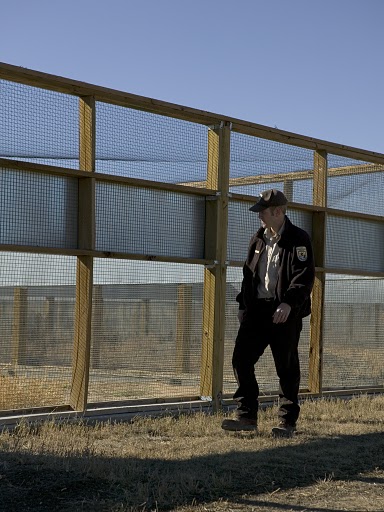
National Black-footed Ferret Conservation Center

USFWS employee walks near the enclosures for the black-footed ferrets at the Black-footed Ferret Conservation Center.